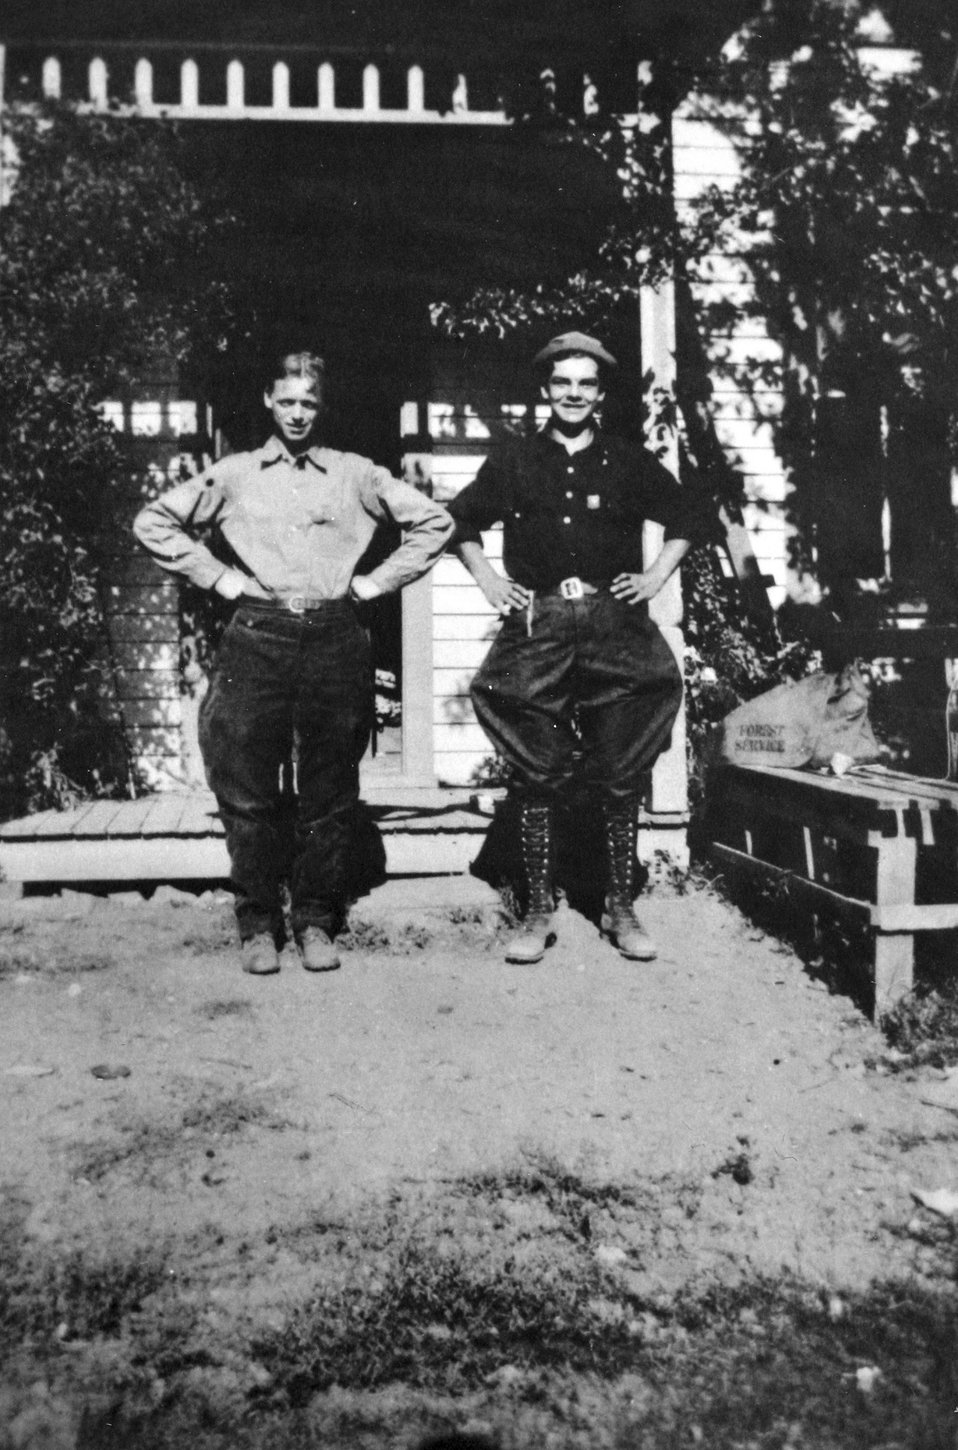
Ivin and George Billings at the Billings Ranch at Mule Creek.